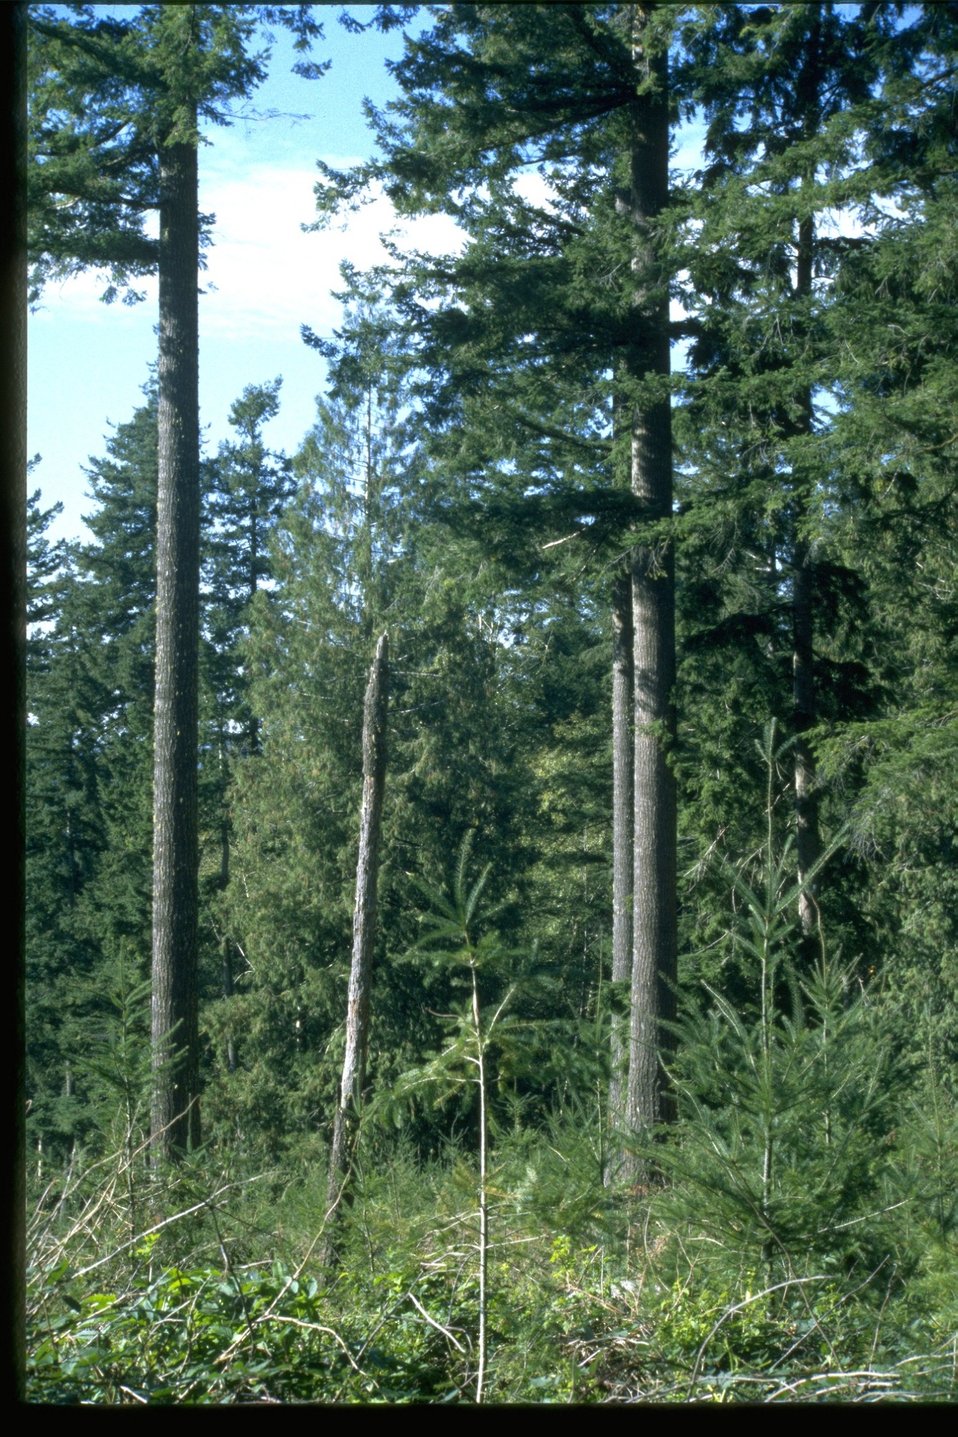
Wildlife trees and reproduction.